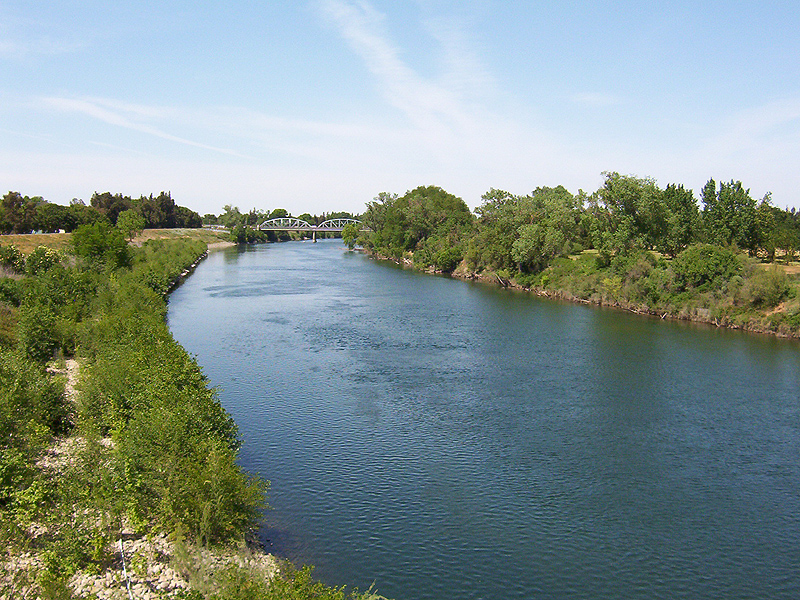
The American River next to Sacramento State University, California.